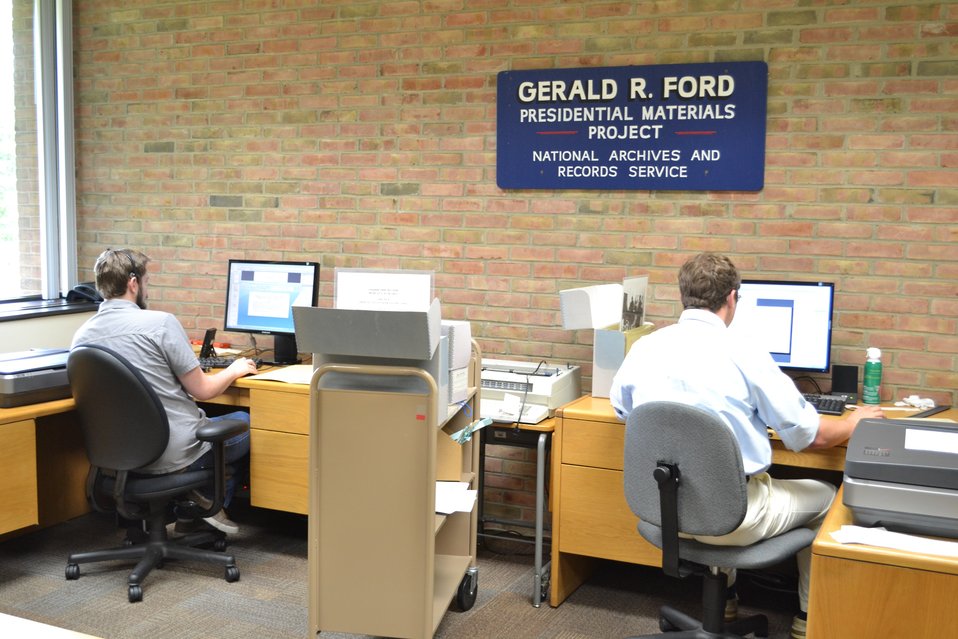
Student Interns Riley O’Brian (left) and Mark Armstrong (right) are Digitizing the White House Records Office Legislation Case Files Collection at the Gerald R. Ford Presidential Library.; Location: Gerald Ford Presidential Library, Ann Arbor, MI